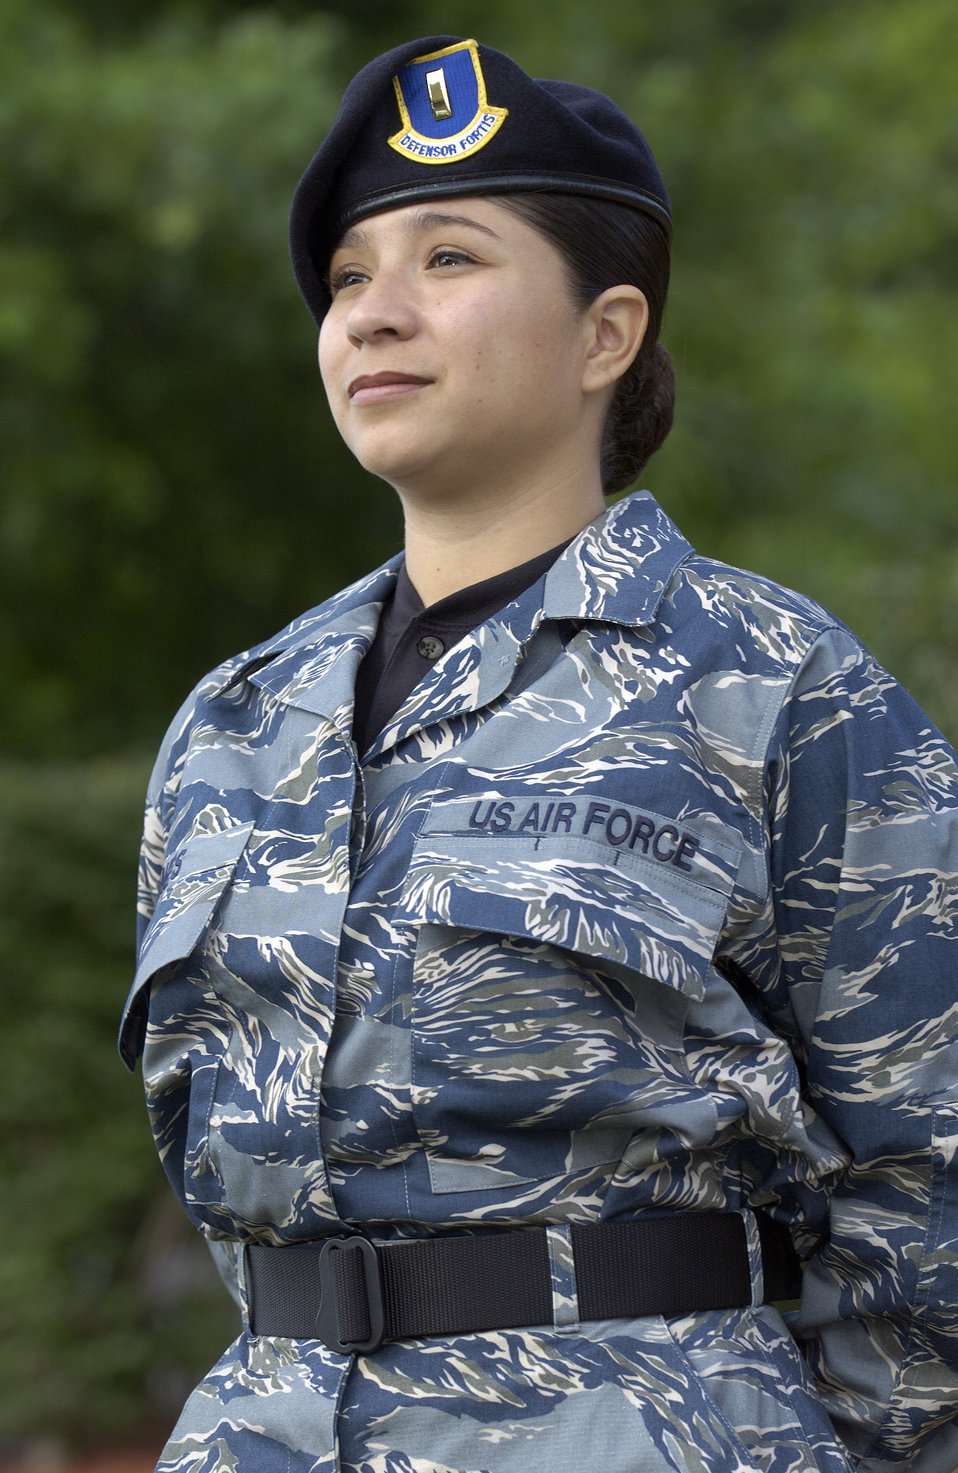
Miller

ANDREWS AIR FORCE BASE, Md. (AFPN) -- Second Lt. Arcelia Miller, from the Air Force’s special security office, puts the Air Force test utility uniform through its paces at an entry control point here. The blue, gray and green tiger-stripe camouflage ensemble includes many new features intended to increase functionality while providing a distinctive look for the 21st century airmen. The uniforms will undergo wear-testing beginning in January 4. Airmen from a cross section of Air Force career fields will provide feedback on the fit, durability and functionality of the proposed ensemble which will come in men's and women's cuts.